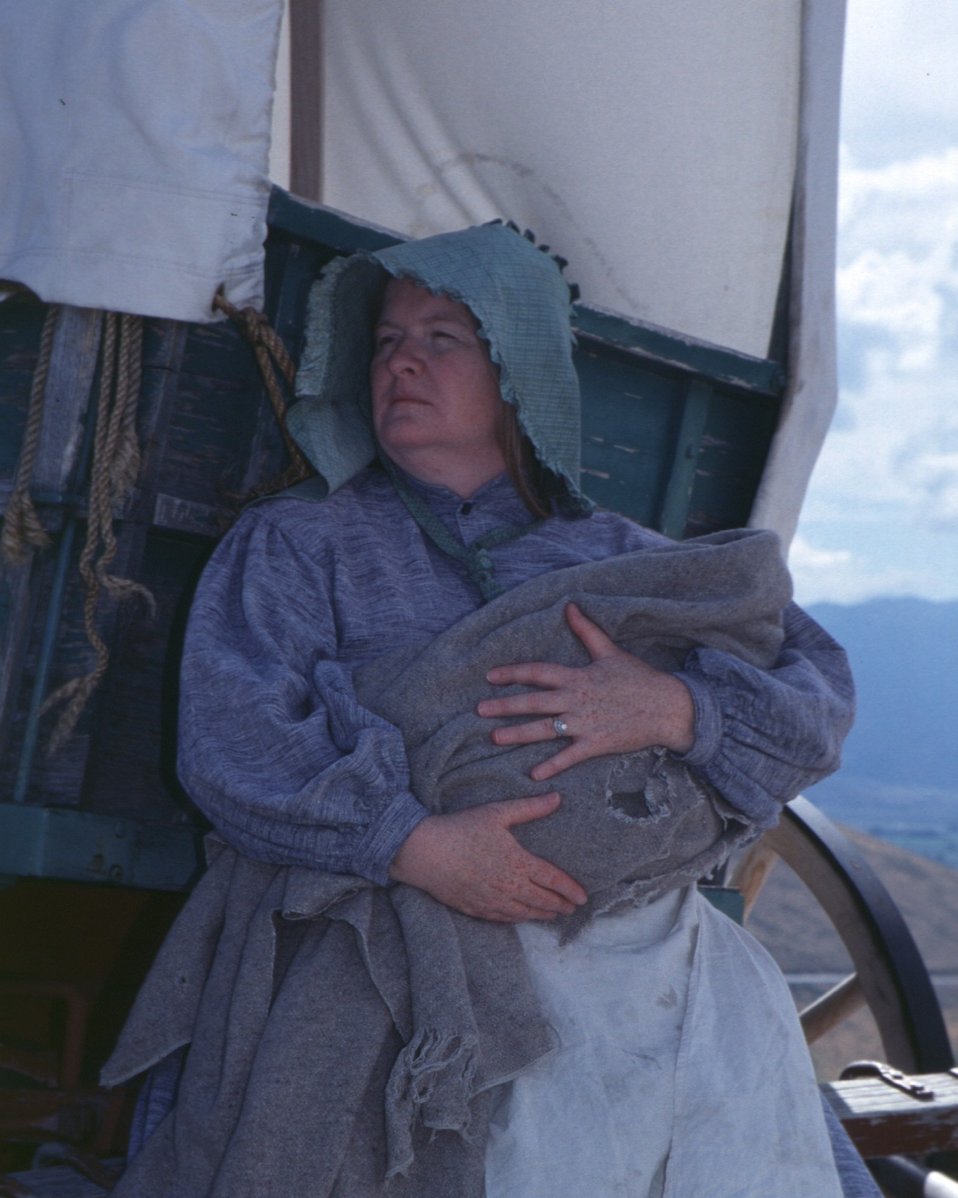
Nancy Harms portrays a pioneer woman holding a swaddled child.